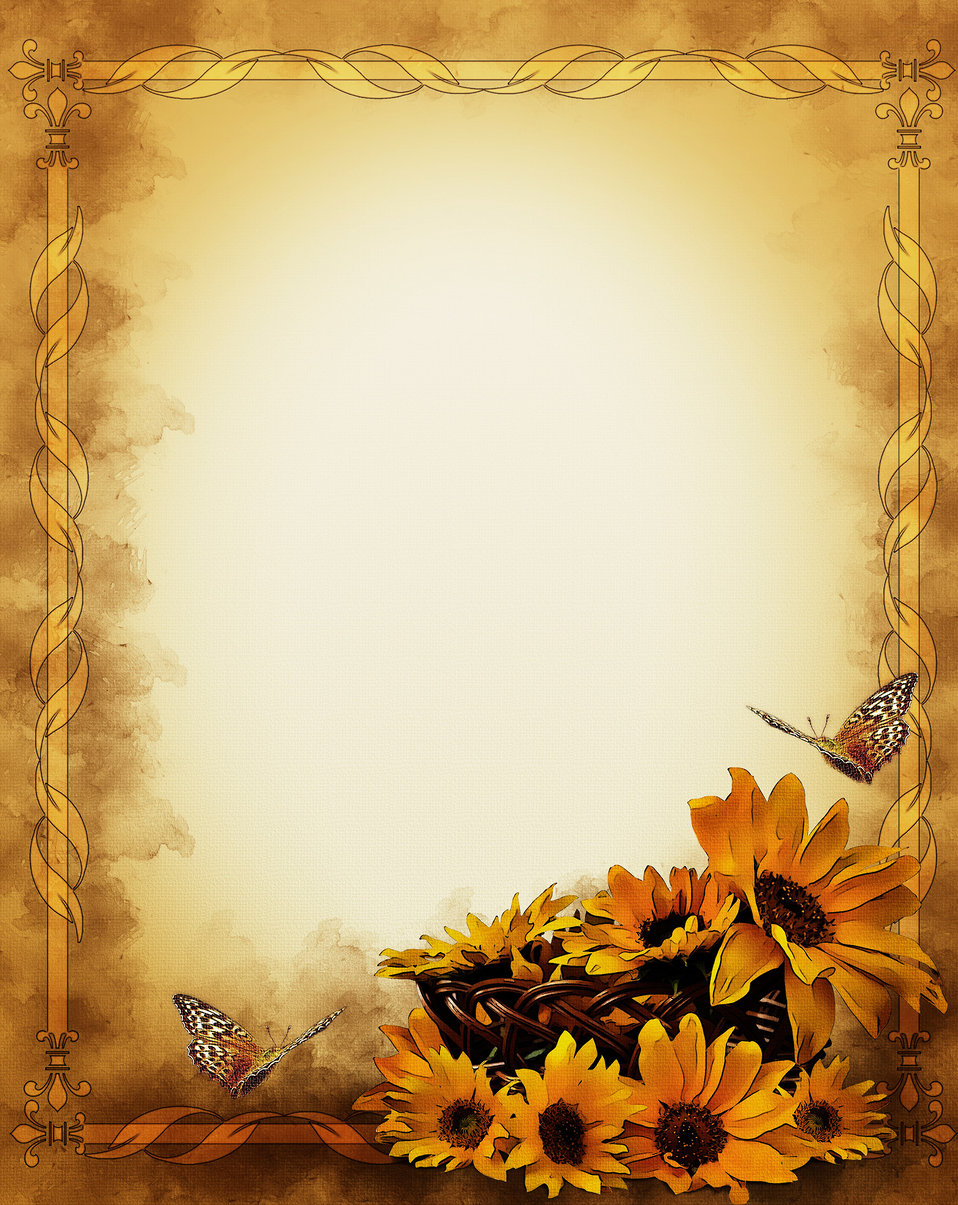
Background with sunflowers

Grunge background with flowers..